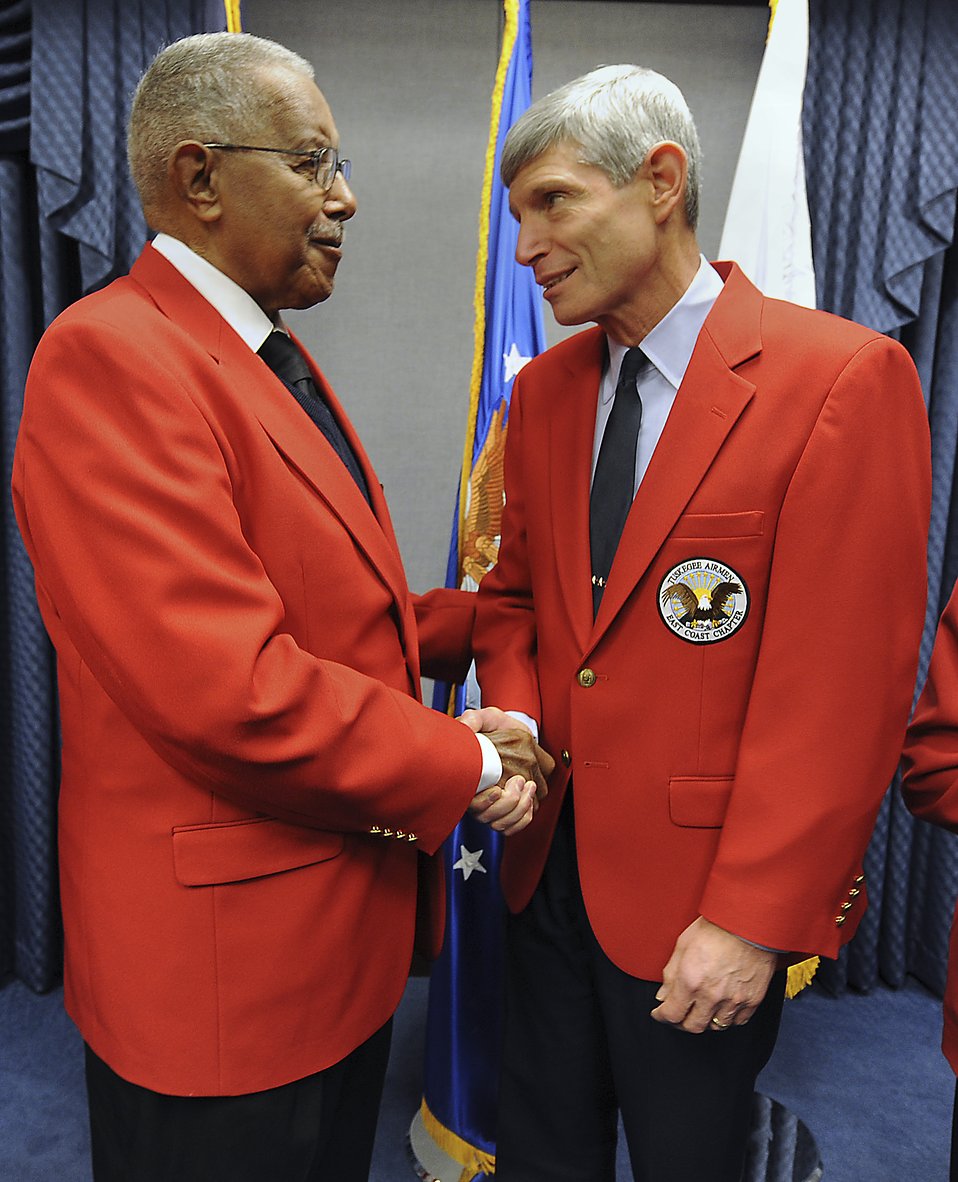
CSAF becomes honorary Tuskegee Airman

James Pryde, an original Tuskegee Airman and former radio operator, congratulates Air Force Chief of Staff Gen. Norton Schwartz after Tuskegee Airmen Incorporated officials presented the general an honorary membership in the organization on Nov. 9, 2010, at the Pentagon. Six original Tuskegee Airmen were present during the brief ceremony in which General Schwartz was presented with his Tuskegee Airmen red jacket. General Schwartz joins Gen. Merrill McPeak and Gen. Ronald Fogleman as the only Air Force chiefs of staff to be recognized with the honorary membership.